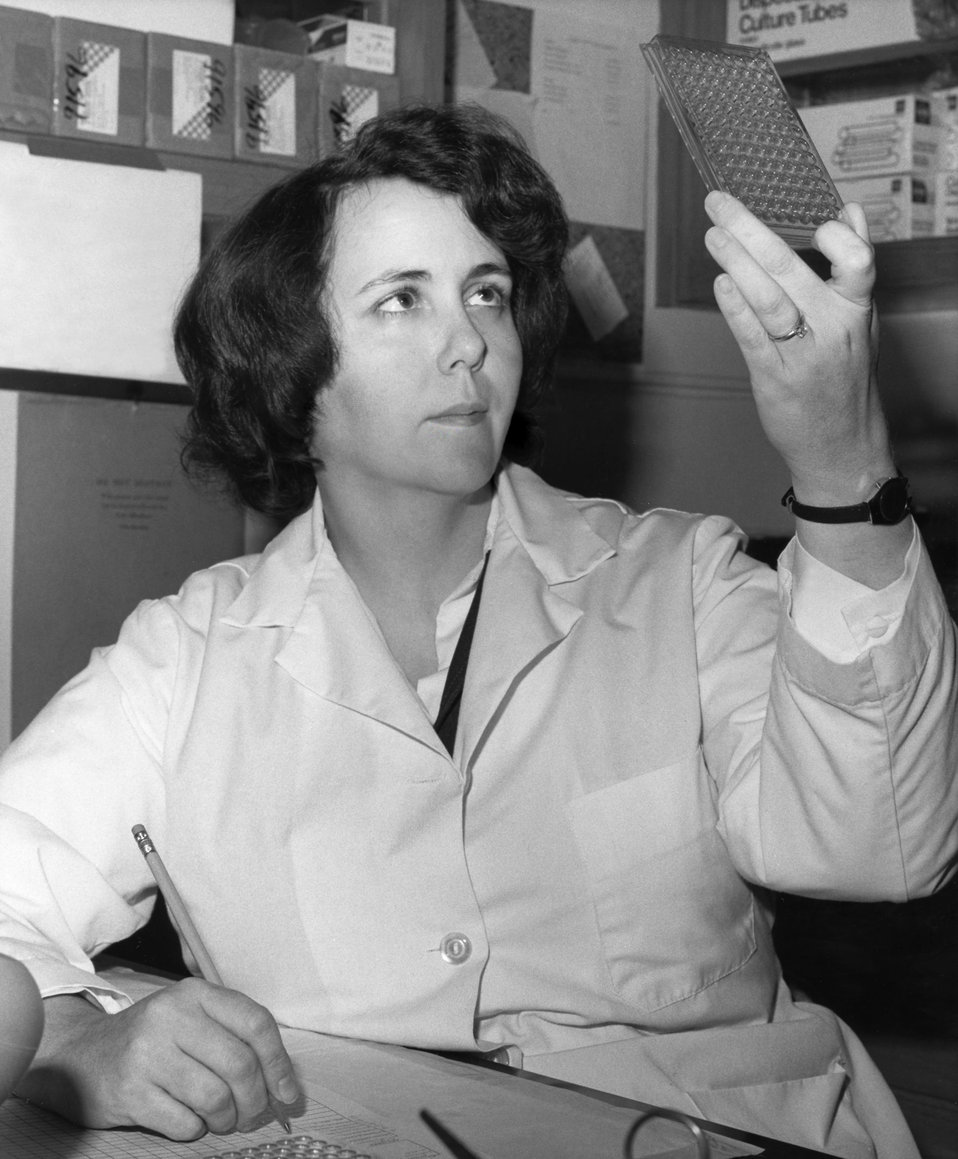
This Centers for Disease Control microbiologist from the Respiratory Virus Infections Unit was shown here holding tissue cultures in a microtiter plate, which were being tested for the presence of the influenza virus.